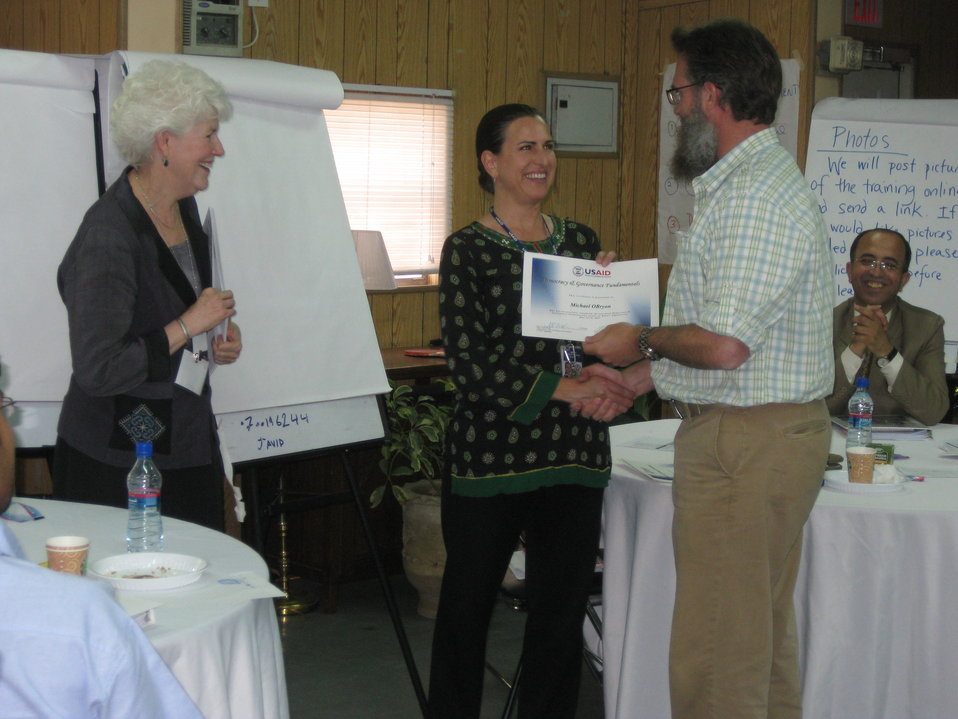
Afghan Youth Voices 062